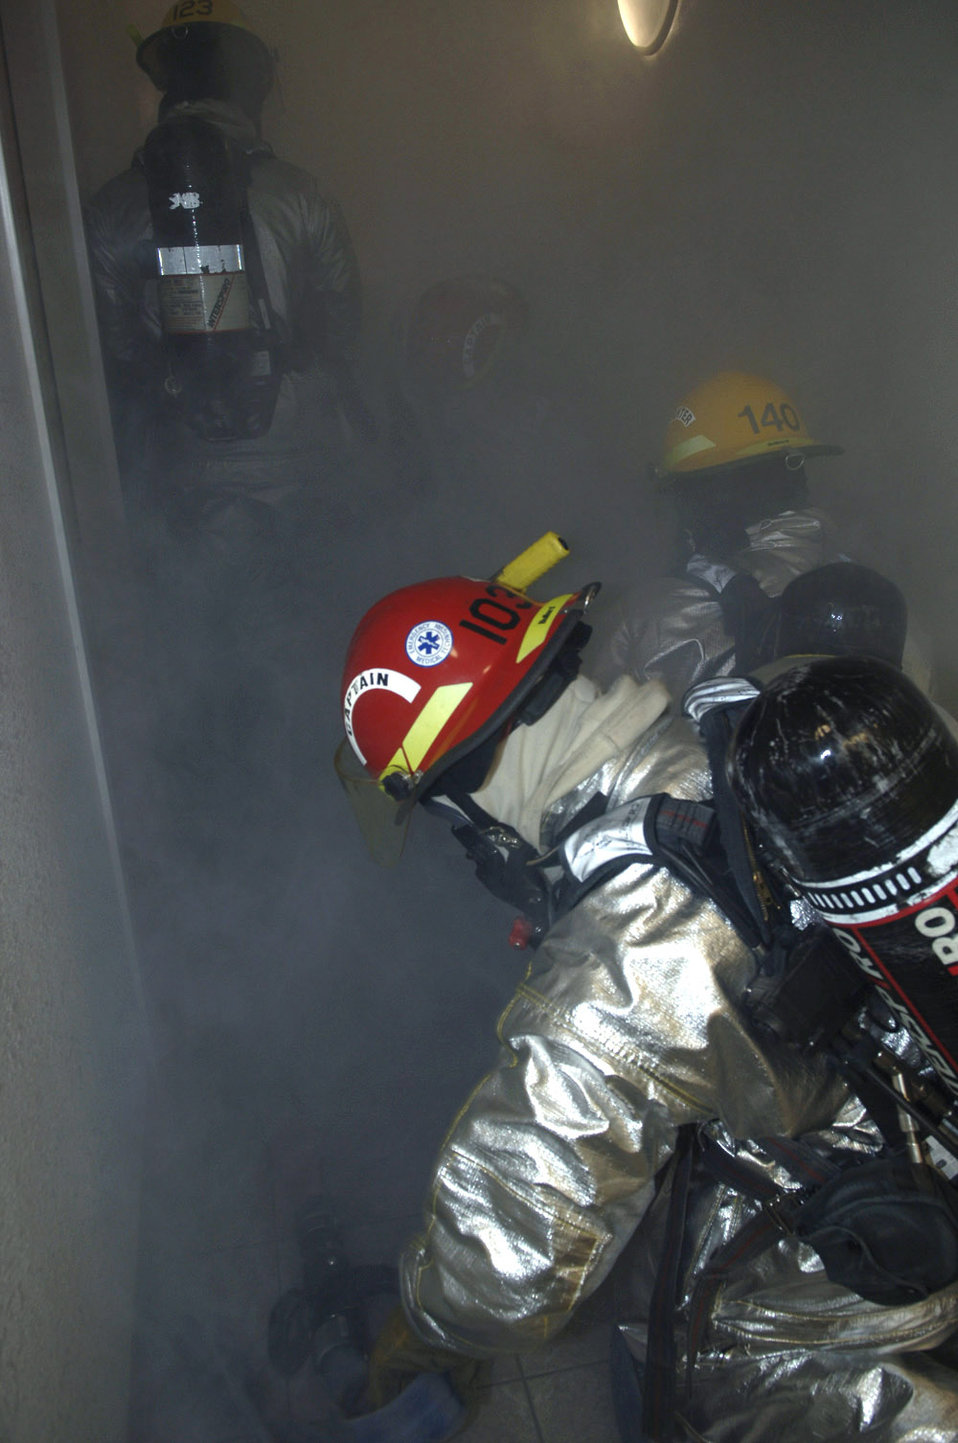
Rescue and readiness

Senior Airman Michael Lewis, Airman 1st Class Robert Whitaker and Tech. Sgt. Steven Nordlund extract personnel from a building during a simulated fire and evacuation at Davis-Monthan Air Force Base, Ariz., in preparation for an operational readiness inspection. The three Airmen are firefighters assigned to the 355th Civil Engineer Squadron.